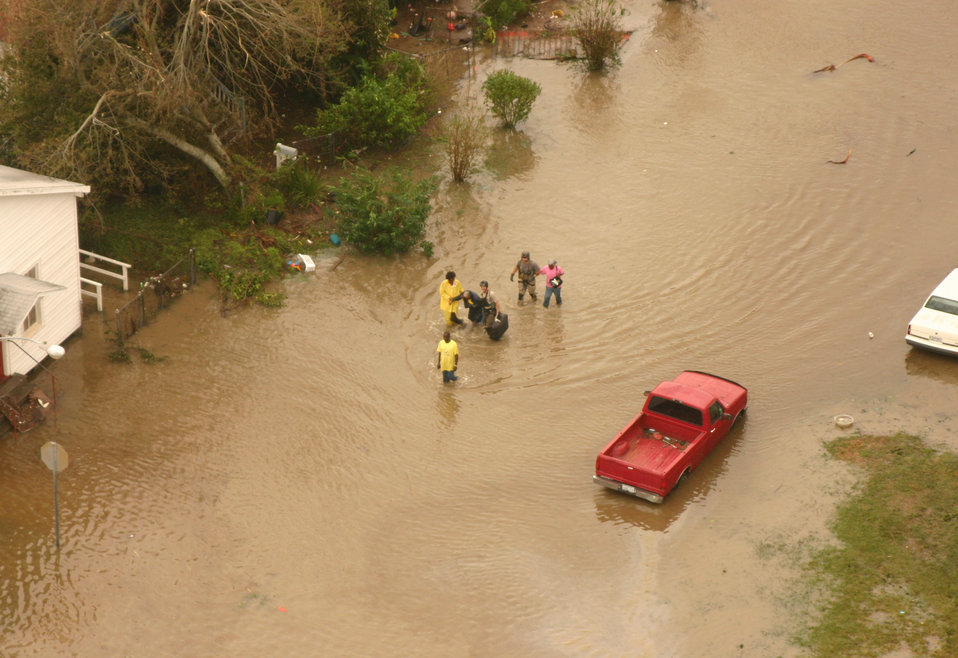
Helicopter aircrews rescue hurricane victims

Joint Task Force-129 pararescuemen help hurricane victims wade through the water to safety Sept. 13 in Galveston, Texas. The JTF-129 crews rescued 48 people and pets stranded in the Galveston area.